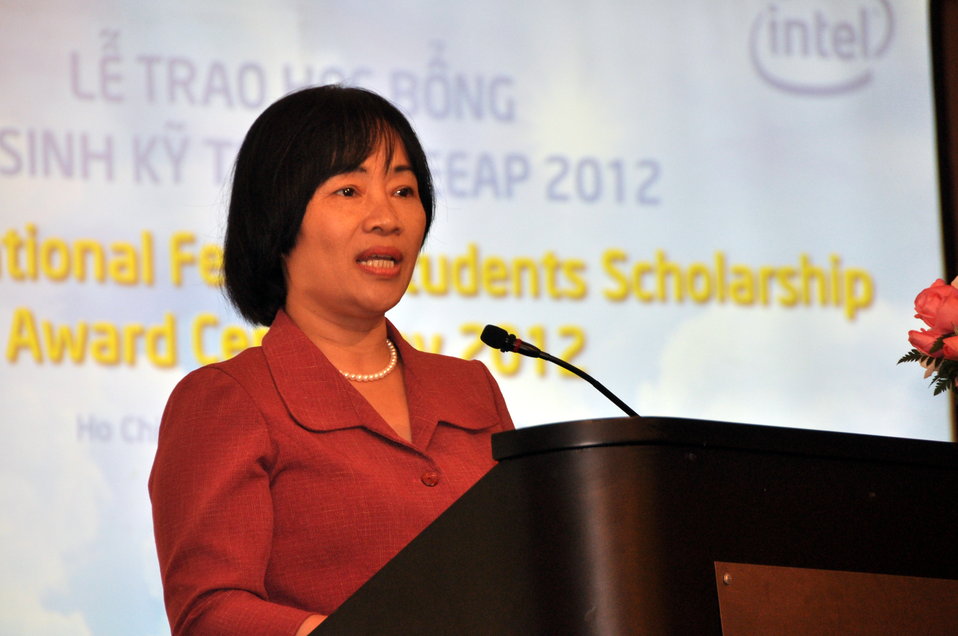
Ms. Nguyen Thi Hang, Rector of Ho Chi Minh Vocational College ofof Technology, speaks at the Female Vocational Student Scholarship Ceremony

Ho Chi Minh City, January 11, 2013